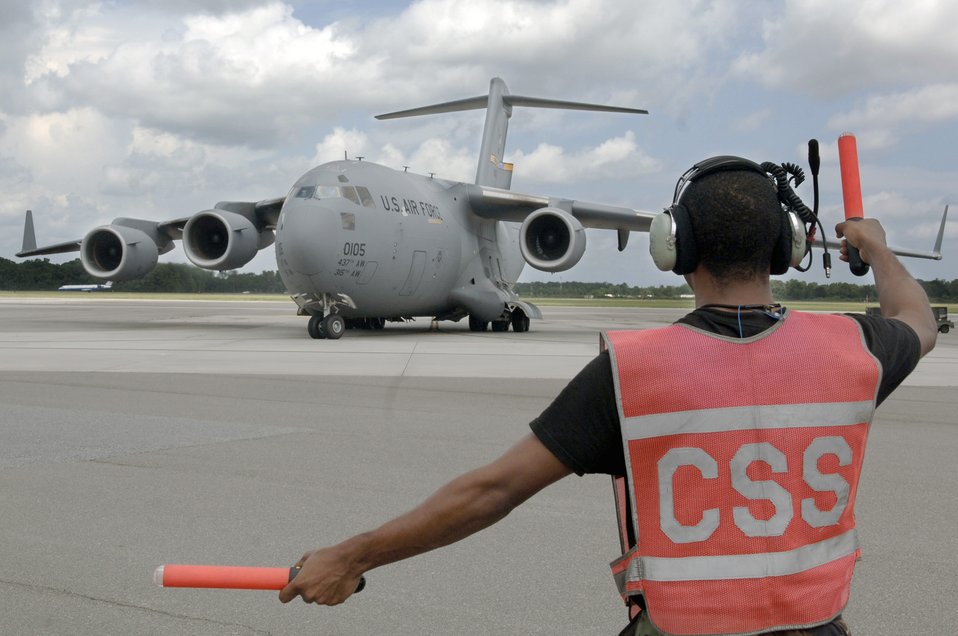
Aircraft evacuated from Charleston

Senior Airman Marcus Lusk taxis out a C-17 Globemaster III Aug. 30 from Charleston Air Force Base, S.C. Airmen from Charleston AFB are in the process of evacuating all operational C-17 aircraft on station due to impending severe weather expected from Tropical Storm Ernesto. Airman Lusk is from the 437th Aircraft Maintenance Squadron.